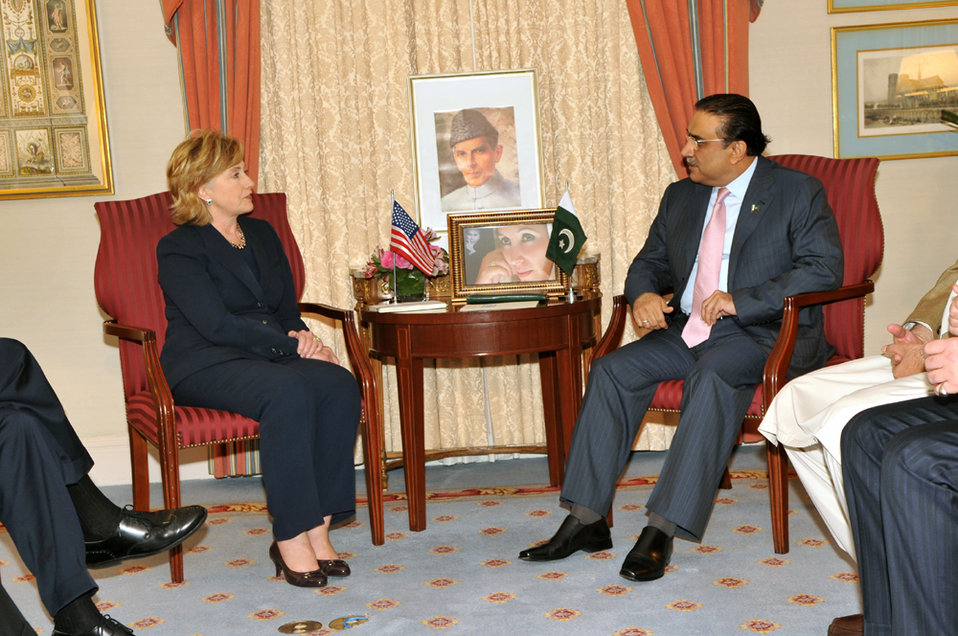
UNGA 2009: Secretary Clinton Meets With Pakistani President

U.S. Secretary of State Hillary Rodham Clinton meets with Pakistani President Asif Ali Zardari at the Waldorf Astoria hotel during the 64th Session of the UN General Assembly in New York City, New York September 24, 2009.